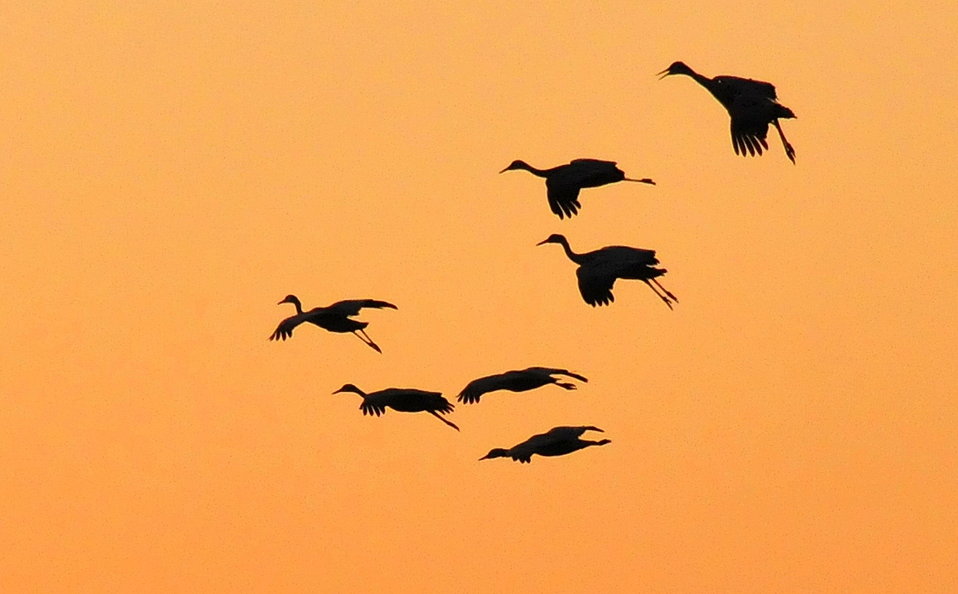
Sandhill Cranes headed to Night Roost

Sandhill cranes headed in to a night roost.